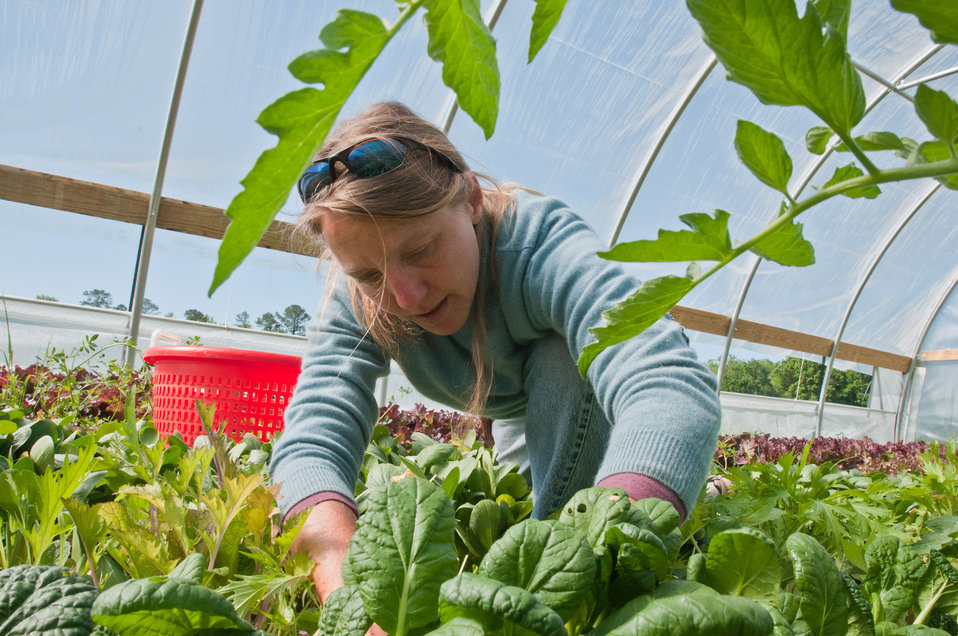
Amy's Organic Garden in Charles City, VA, on Thursday, May 5, 2011. Owner Amy Hicks harvesting greens at her farm. Ms. Hicks' farm participates with Fall Line Farms a local food cooperative in the Richmond, VA area that offers a wide variety of household food staples and specialty items on an ever changing inventory of fruits, vegetables, meats, soaps, eggs, cheeses, flowers, honey, pastas, sauces, syrups, baked goods, mushrooms, flour and grains. Suppliers post what they have on a Lulus Local Food online listing and customers can make their selection. Every Thursday suppliers deliver orders to, one of several pick-up points, designated by the customers in or around the Richmond area.